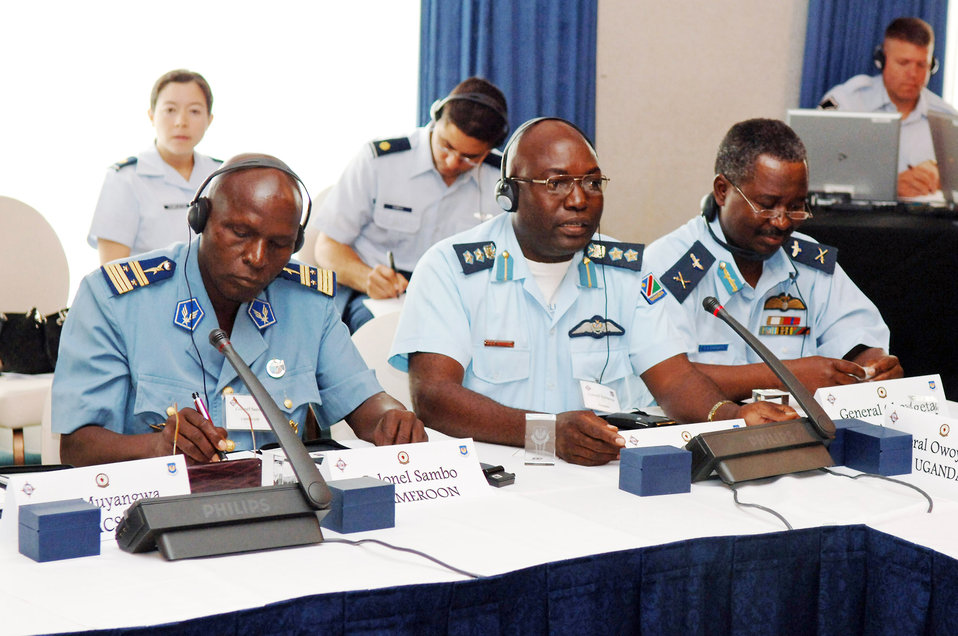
African air chiefs discuss cooperation, challenges

Deputy Air Commander Col. Paavo Kamanya (center) of the Namibian Air Force discusses issues involving African airpower during a panel discussion at the African Air Chiefs Conference May 23 at Ramstein Air Base, Germany. Leaders met to explore ways in which strategic partnerships and regional cooperation can improve air safety and security across the continent.